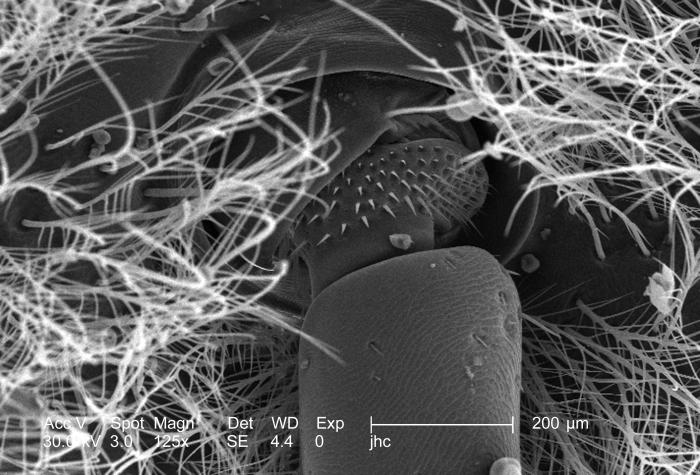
Under a relatively low magnification of only 125x, this scanning electron micrograph (SEM) depicted some of the ultrastructural morphologic features displayed on the surface of a carpenter bee's, Xylocopa virginica head. This particular bee was found deceased on the grounds of the Decatur, Georgia suburbs, an area where these insects are quite common. Carpenter bees can be quite a nuisance, for they are well known as wood-borers, and can create many unsightly holes in a home's wooden components.